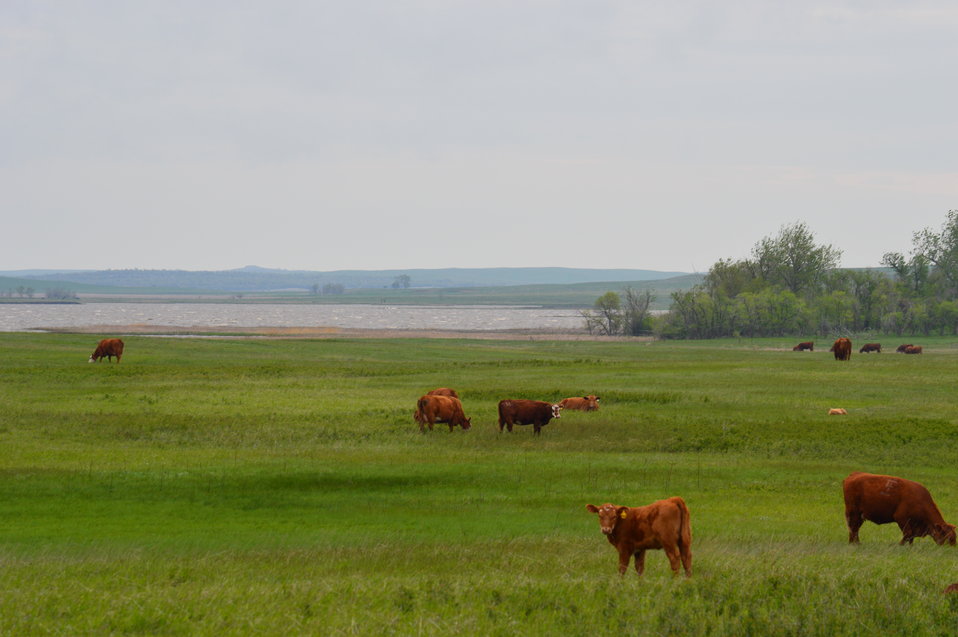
Cattle grazing

Scenery and wildlife at Lake Ilo National Wildlife Refuge in North Dakota